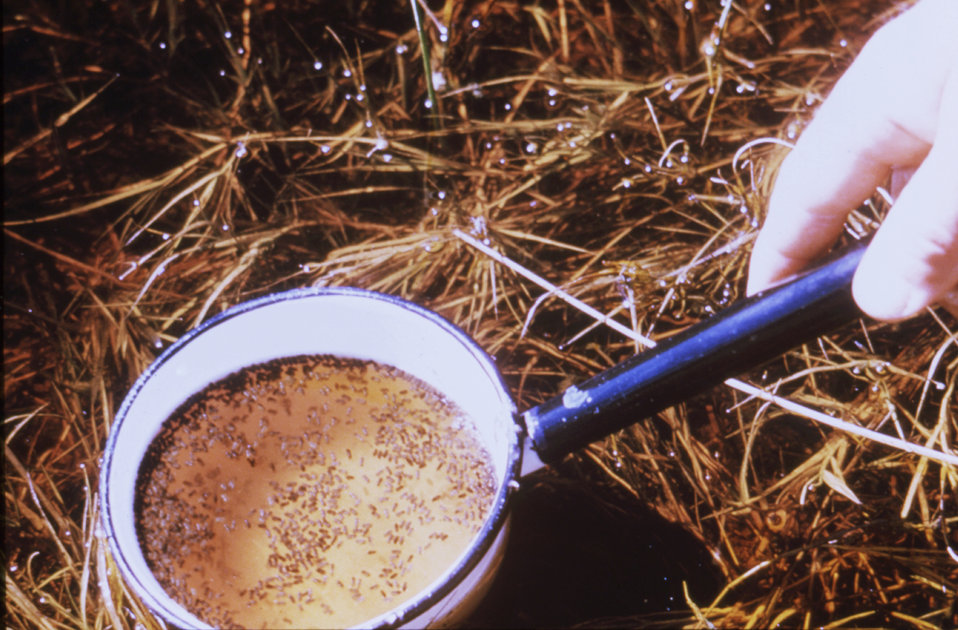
This entomologist is holding a dipper containing a water sample with numerous mosquito pupae (late stage larvae).